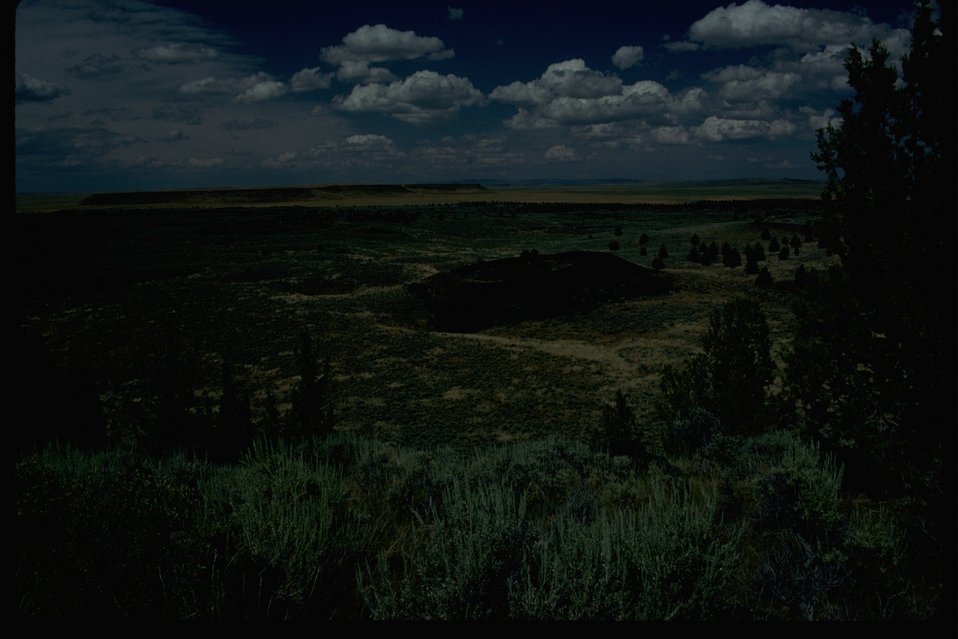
Little red cone in the Diamond Craters Outstanding Natural Area.